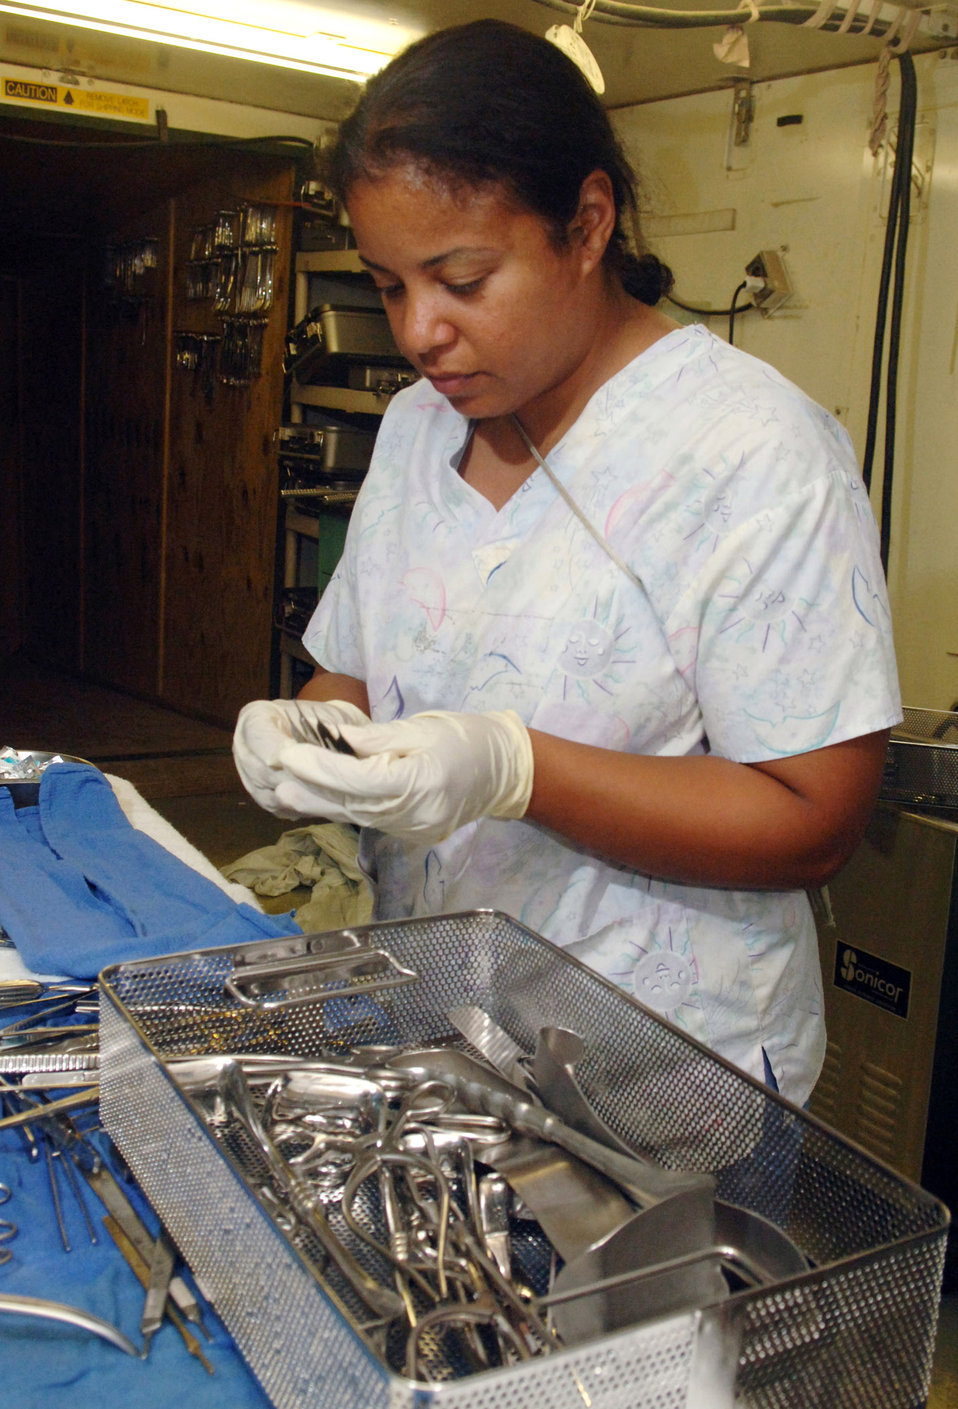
Airman continues grandfather?s Tuskegee legacy at Balad

Tech. Sgt. Rose Noches sets up equipment for an exploratory laparotomy procedure at Balad Air Base, Iraq. Sergeant Noches is a granddaughter of 1st Lt. Ramon F. Noches, a Tuskegee Airman killed in a B-25G aircraft accident June 6, 1945, during night-flying training from Gunter Army Air Field at Montgomery, Ala. Sergeant Noches is a surgical service craftsman with the 332nd Expeditionary Medical Group and a living legacy to the Tuskegee Airmen of World War II fame. She is deployed from Lackland Air Force Base, Texas.